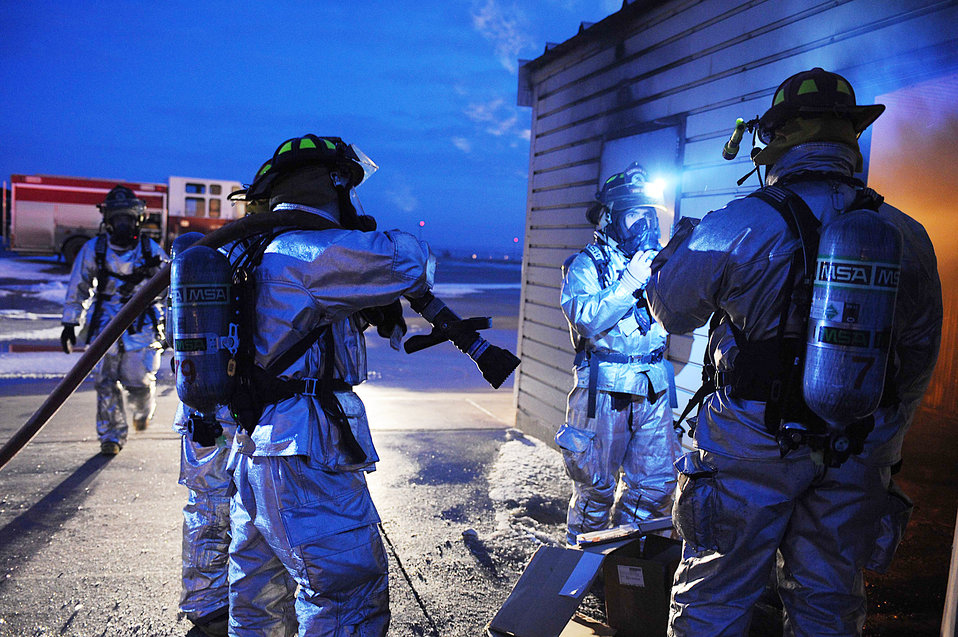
Ellsworth firefighters train at night

Firefighters from the 28th Civil Engineer Squadron gather outside a house